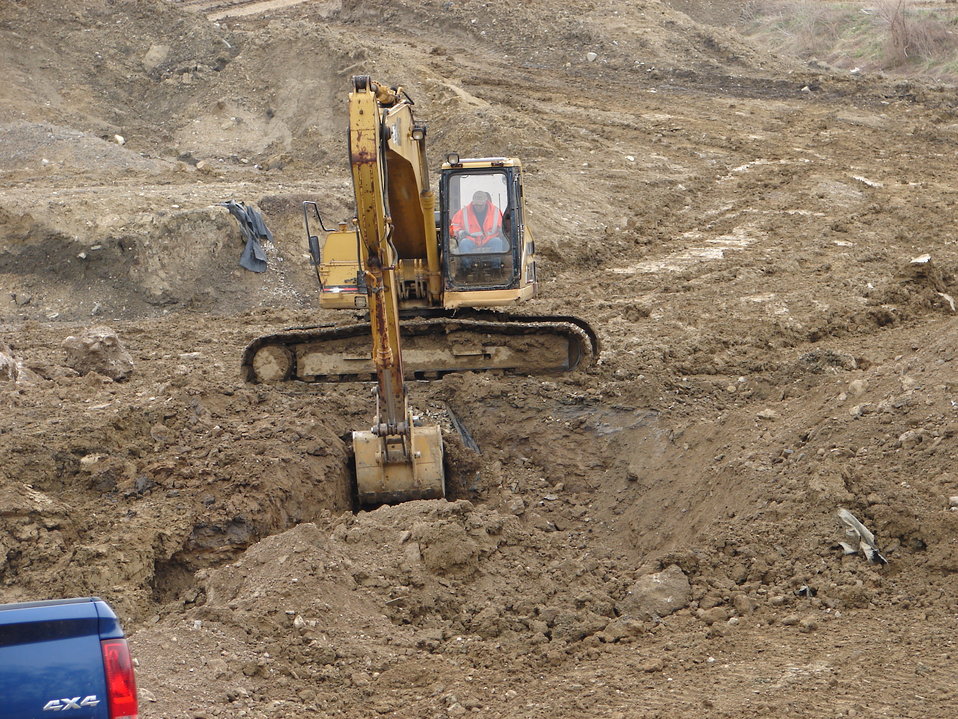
Recovery Act Project Brings End to Mound Site Cleanup Activities

The Recovery Act invested $17.9 million in the completion of EM’s legacy cleanup activities at the Mound Site in 2010.
Recovery Act workers disposed nearly 20,000 cubic meters of soil and demolition debris in the cleanup, which focused on the Operable Unit-1, a former mixed-waste landfill at the 306-acre site. The Recovery Act cleanup was the final remediation project at Mound.
The federal government is in the process of transferring ownership of the site to the Mound Development Corporation, a community reuse organization.